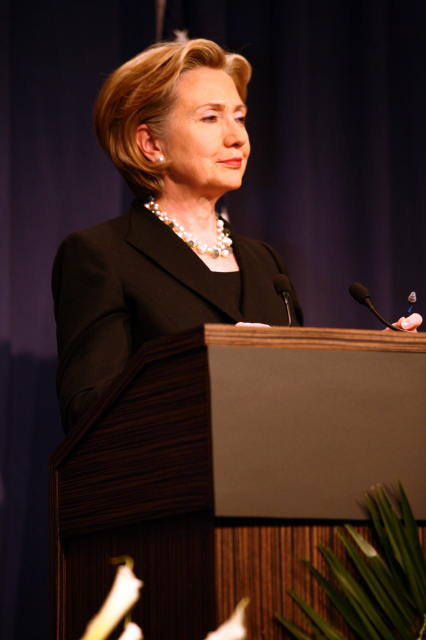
Press Conference With Russian Foreign Minister

Press conference after dinner meeting between U.S. Secretary of State Hillary Rodham Clinton and Russian Foreign Minister Sergey Lavrov in Geneva, Switzerland March 6, 2009.